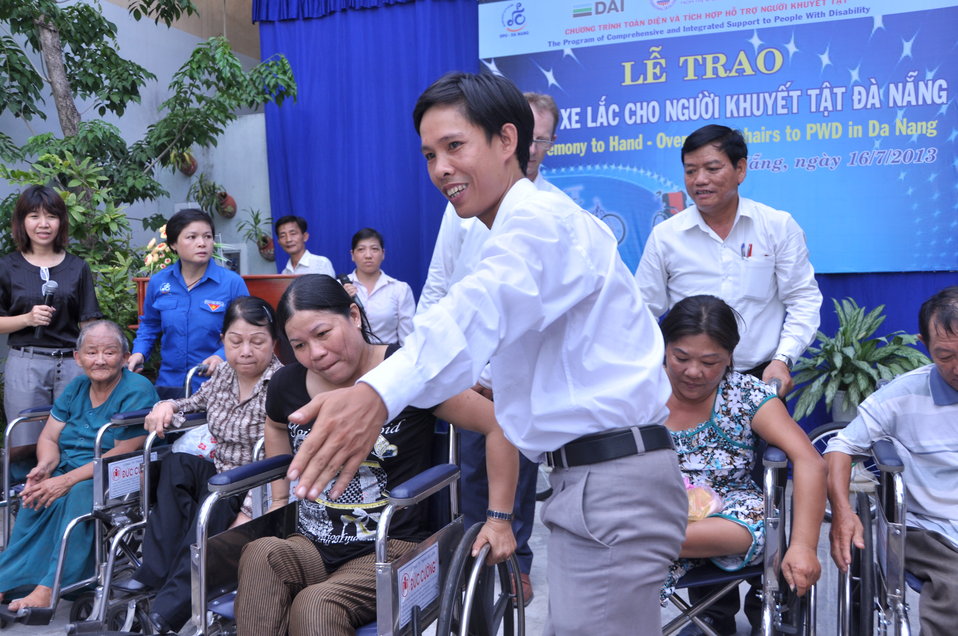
USAID Project Supports Rehabilitation Department for Children and Wheelchair Distribution in Danang

Beneficiaries in Danang, Vietnam, receive wheelchairs.